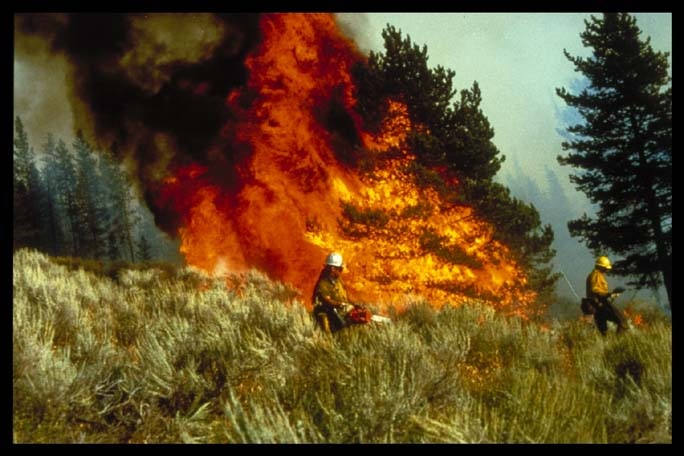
Wildland fire